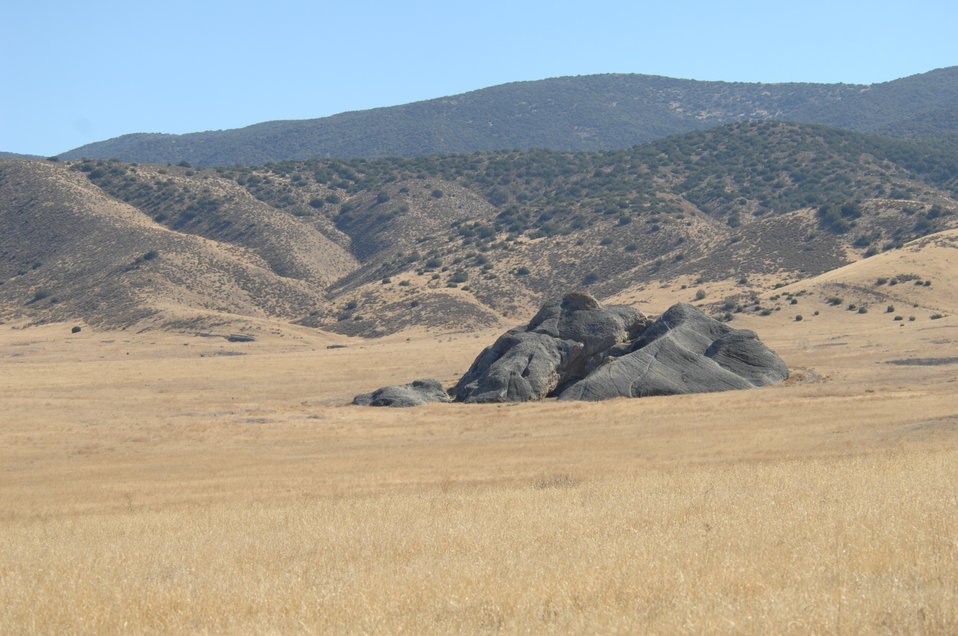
Painted Rock, Carrizo Plain 3